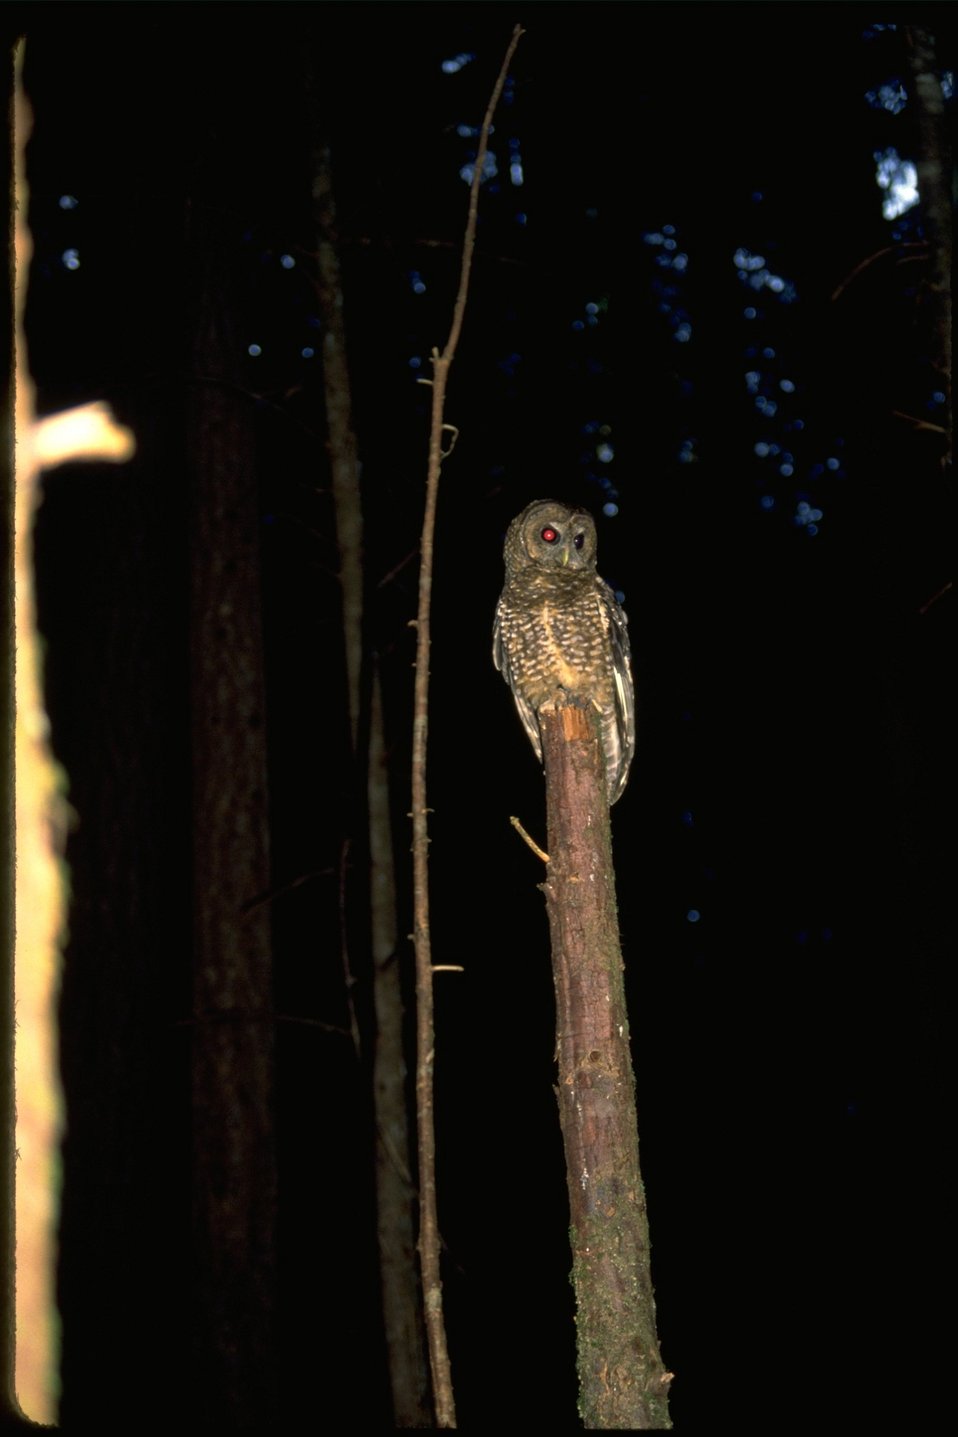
Adult Northern Spotted Owl perched on tree.